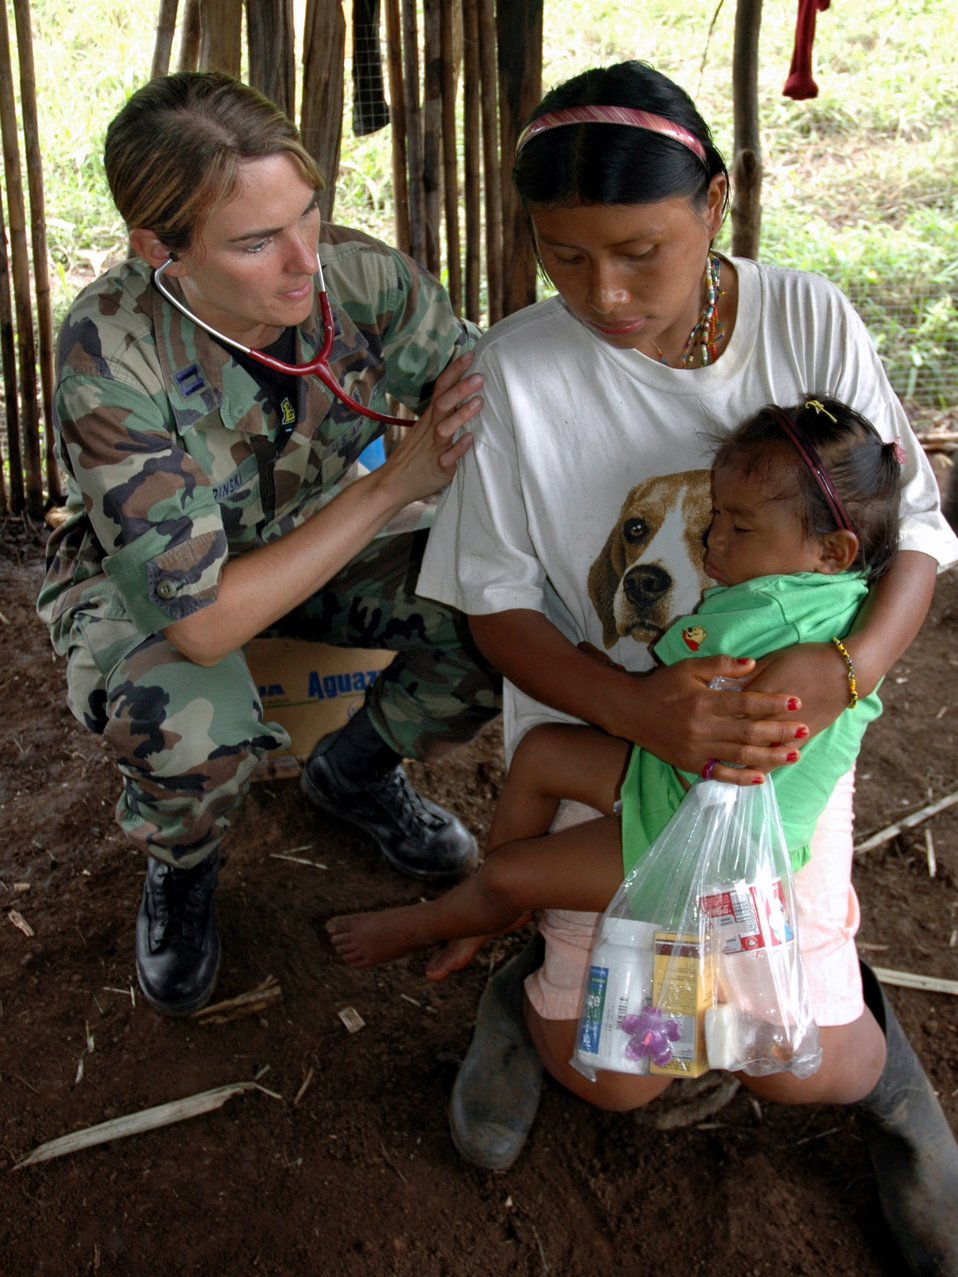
American servicemembers deploy to Costa Rica

Capt. Michelle Sredinski listens to the breathing of a native Costa Rican woman at a makeshift clinic Dec. 19 at Piedra Mesa, Costa Rica. Captain Sredinski is assigned to the Joint Task Force-Bravo medical element. JTF-Bravo deployed 28 servicemembers from Soto Cano Air Base, Honduras, to Costa Rica at the invitation of the country's ministry of health for a medical readiness training exercise.